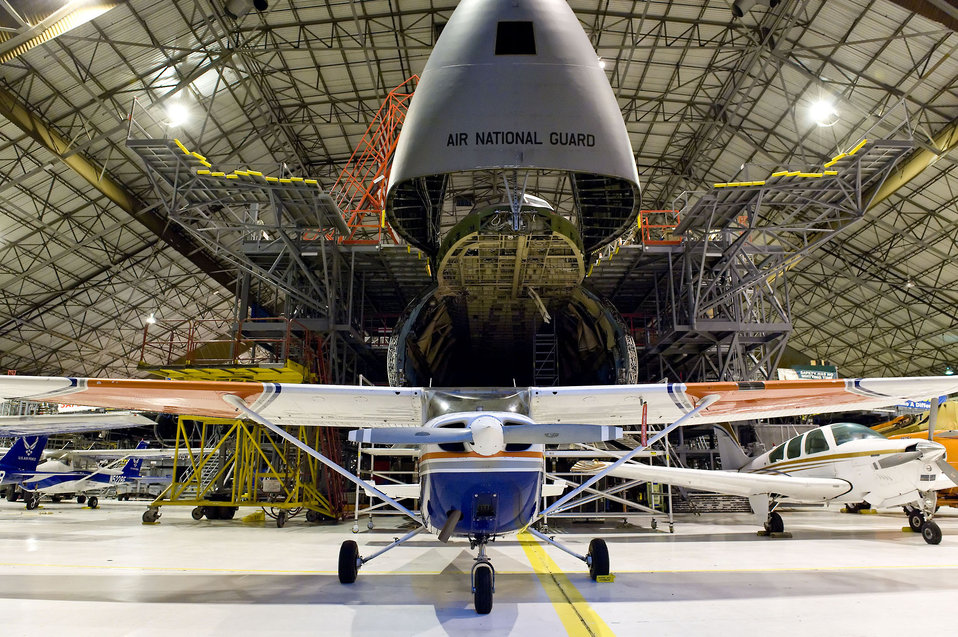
Dover Air Force Base prepares

Aero Club and Civil Air Patrol aircraft are parked around a C-5 Galaxy Oct. 30, 2012, at Dover Air Force Base, Del. The aircraft were placed in a hangar prior to Hurricane Sandy’s arrival.